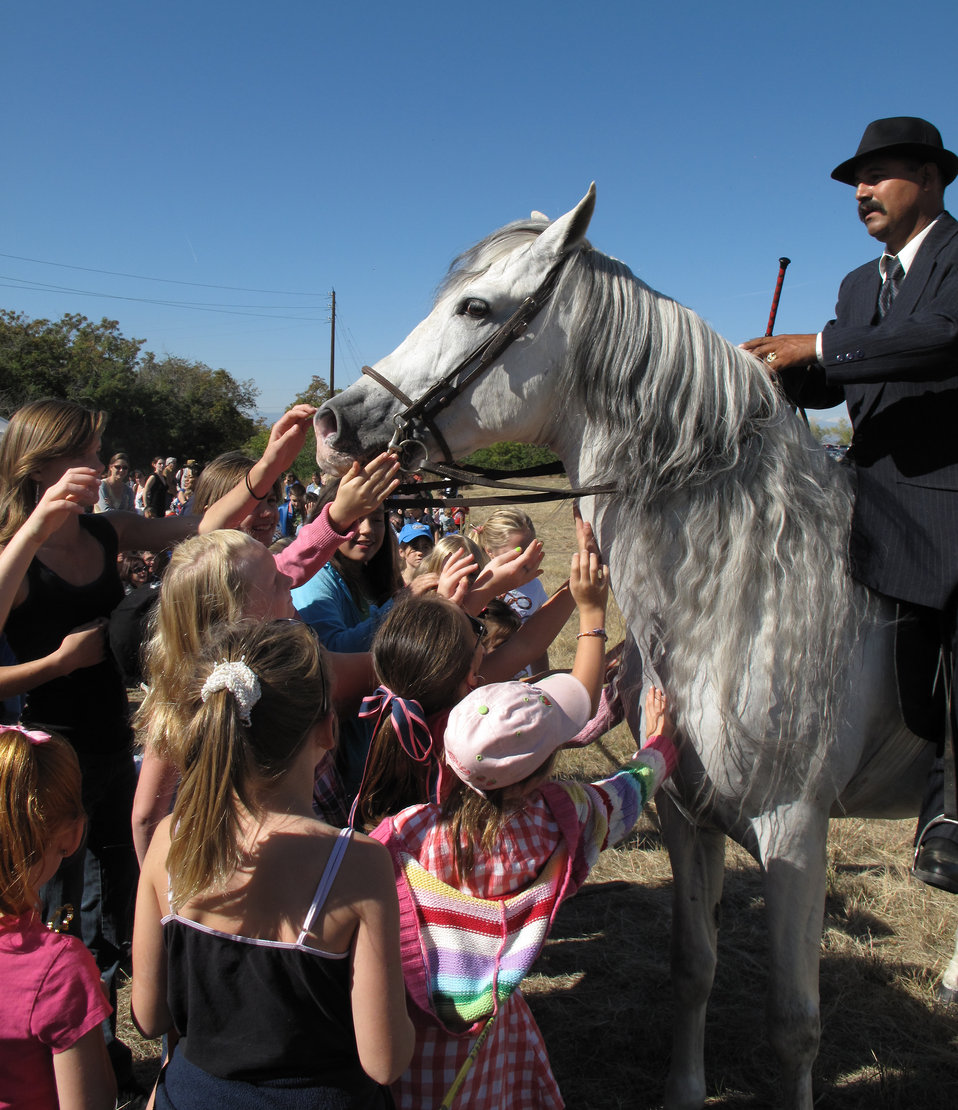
Refuge Round-Up 2010

Jose and his dancing horses are a hit with children.